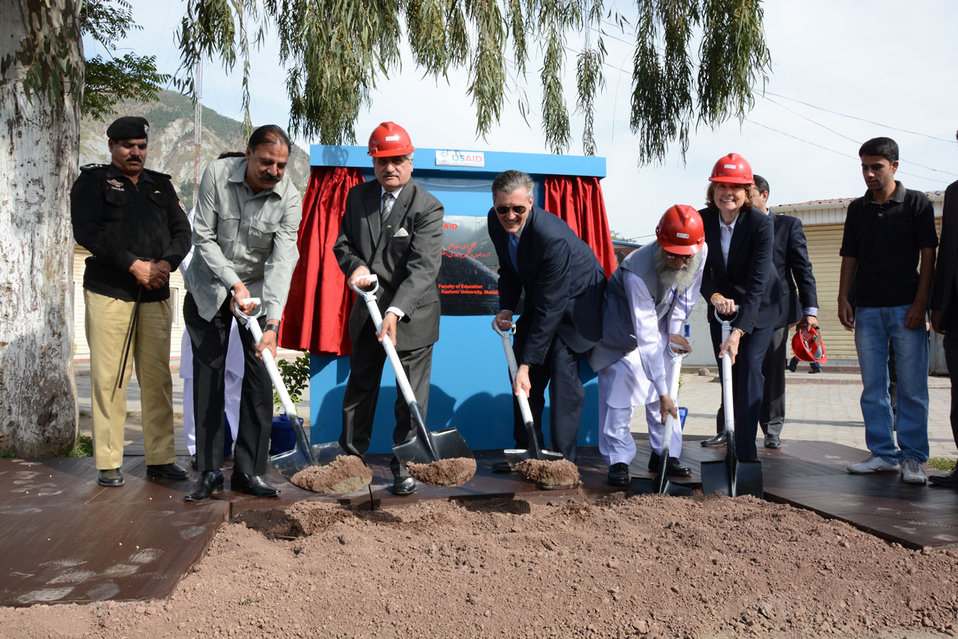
The United States Ambassador to Pakistan, Richard Olson broke ground for a U.S. funded construction of a new Faculty of Education building in Muzaffarabad, AJK. 30